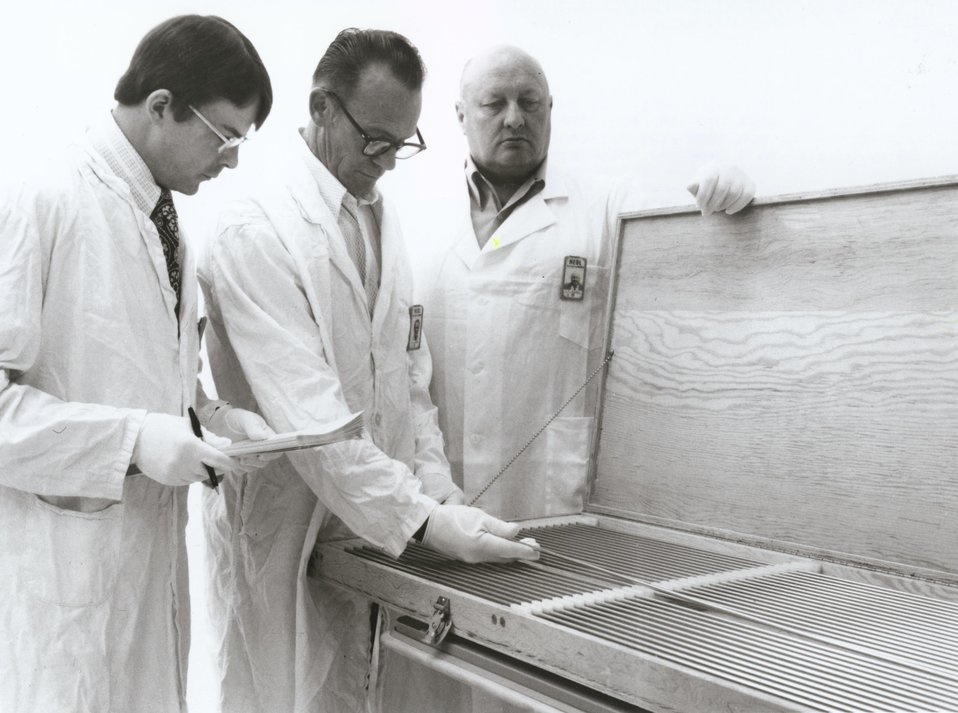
220 fuel pins of the 18,000 on order for the Fast Flux Test Facility (FFTF) are inspected at the AEC Hanford, WA facility.
c.1974